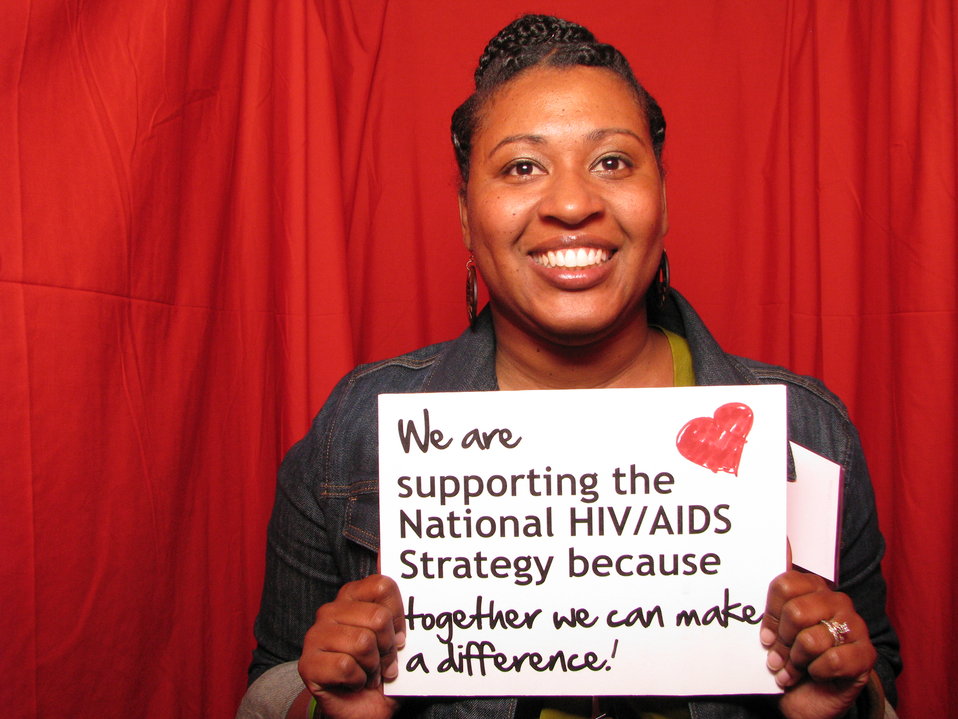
We are supporting the National HIV/AIDS Strategy because together we can make a difference.

From the AIDS.gov photo booth at the U.S. Conference on AIDS, September 2010 (Orlando, FL).